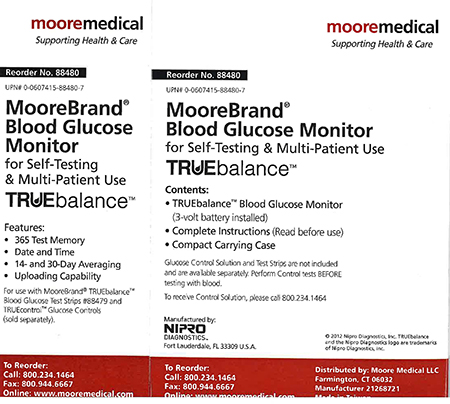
RECALLED – Blood Glucose Meters

January 2, 2014 – Product Recall – Nipro Diagnostics, Inc. Initiates Voluntary Recall of Certain TRUEbalance and TRUEtrack Blood Glucose Meters.